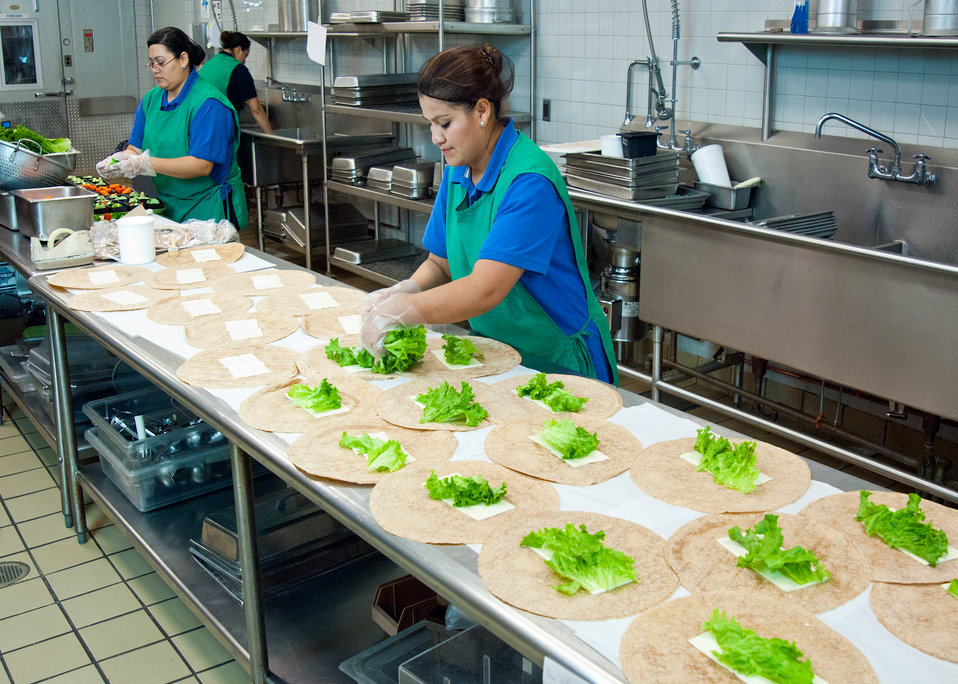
Candy Flores (right), prepares ham and cheese wraps and Rosalba Gomez, prepares fresh vegetable cups for the National School Lunch Program in the kitchen at Washington-Lee High School in Arlington, Virginia, on Wednesday, October 19, 2011. The National School Lunch Program is a federally assisted meal program administered by the United States Department of Agriculture, Food and Nutrition Service operating in public, nonprofit private schools and residential child care institutions. It provides nutritionally balanced, low-cost or free lunches to children each school day.